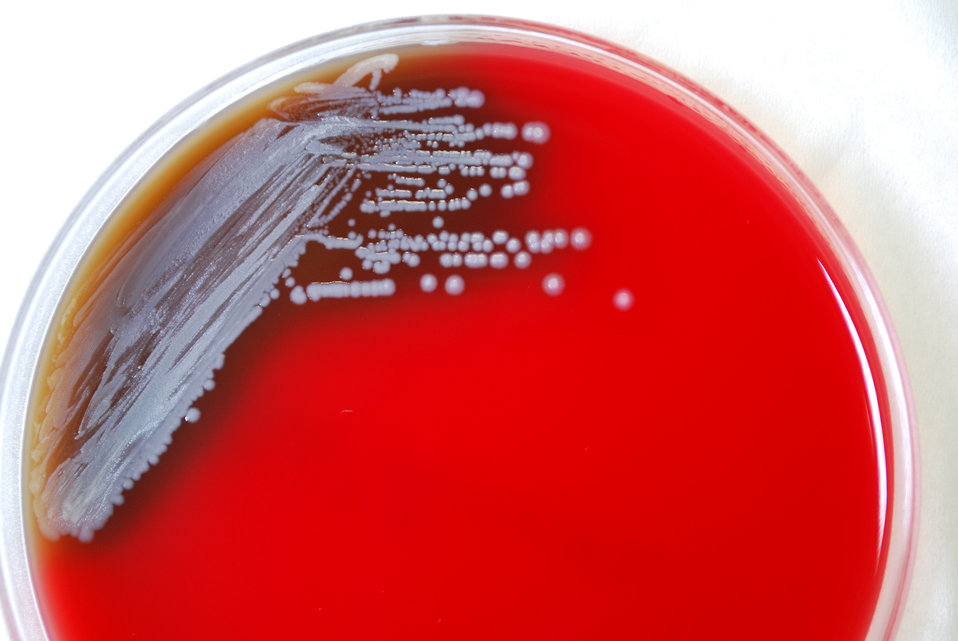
As a closer view of PHIL 12233, this photograph depicts the colonial morphology displayed by Gram-negative Burkholderia pseudomallei bacteria, which was grown on a medium of sheep's blood agar (SBA), for a 48 hour time period, at a temperature of 37�C.